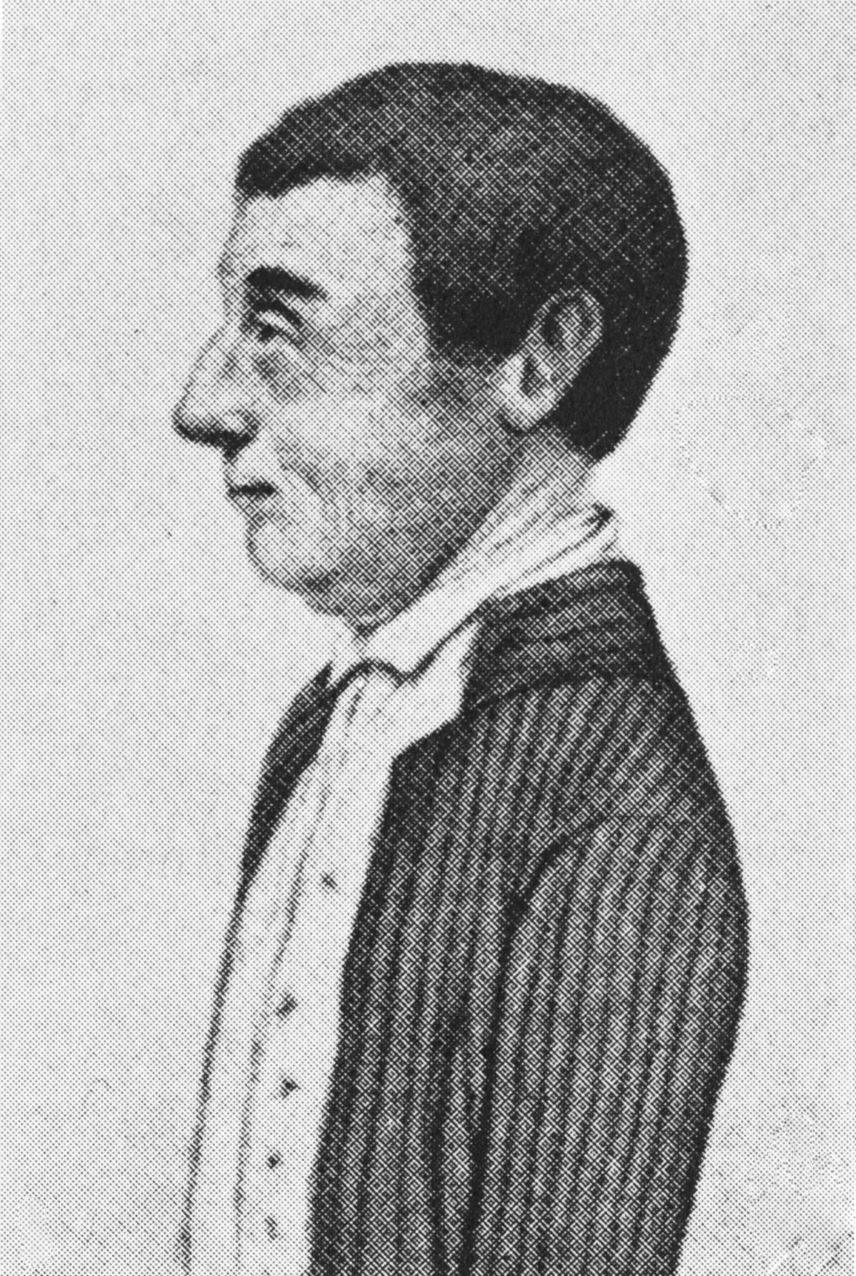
Abbot John 1751-1840